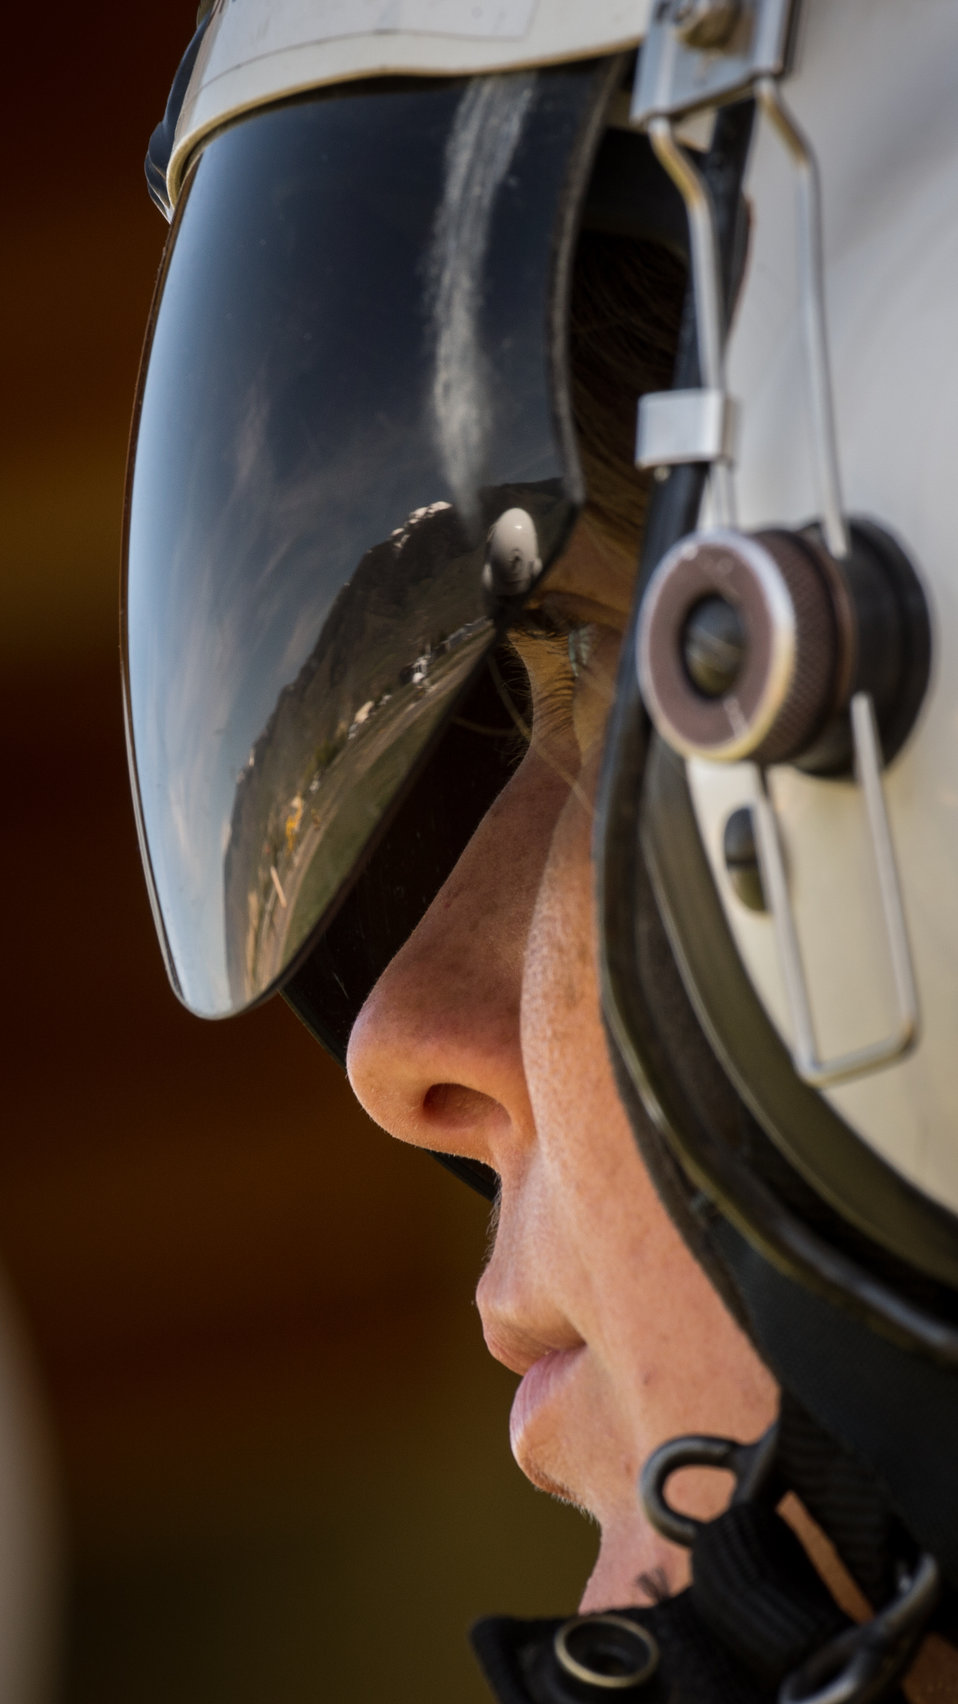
Veteran wildland firefighter rappeller Brianna Carollo stands ready to move forward to a Bell 205 helicopter, that she will rappel from, at theU.S. Department of Agriculture (USDA) U.S. Forest Service (USFS) National Helicopter Rappel Program’s Rappel Academy at Salmon Air Base in Salmon, ID on Wednesday, May 14, 2014. From May 12, 2014, 72 veteran rappellers from all over the nation, 30 support staff, and three helicopters with flight crews attend the training at Salmon Air Base. Participants will rappel into the Perreau Creek area. The annual training is delivered in accordance with the National Rappel Operations Guide; strengthen leadership, teamwork, and communications within the rappel community, and produces quality aerial delivered firefighters for use in fire and aviation operations. The USDA Forest Service National Helicopter Rappel Program’s primary mission is initial attack. Rappel crews may be utilized for large fire support, all hazard incident operations, and resource management objectives.